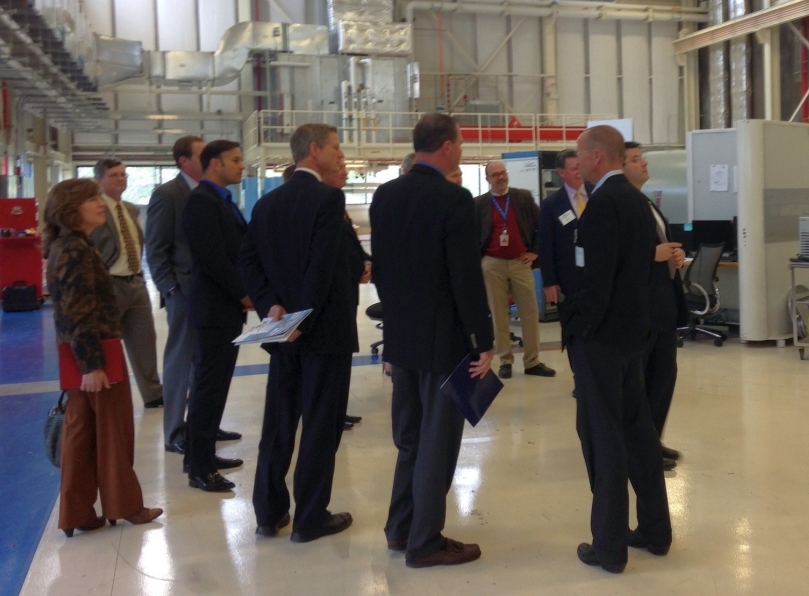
Greater Phoenix Economic Council Tour

NIST scientists Dr. Robert Dimeo (right) and Dr. Dan Neumann (center) provide a tour of the recently expanded research space in the NIST Center for Neutron Research to members of the Greater Phoenix Economic Council.